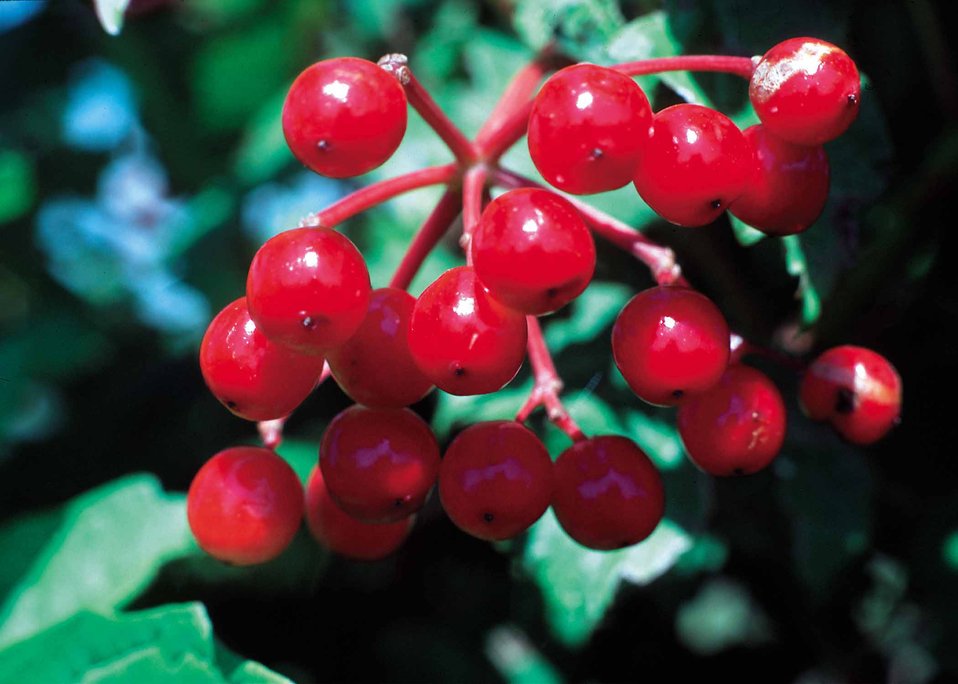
Berries are food for wildlife.